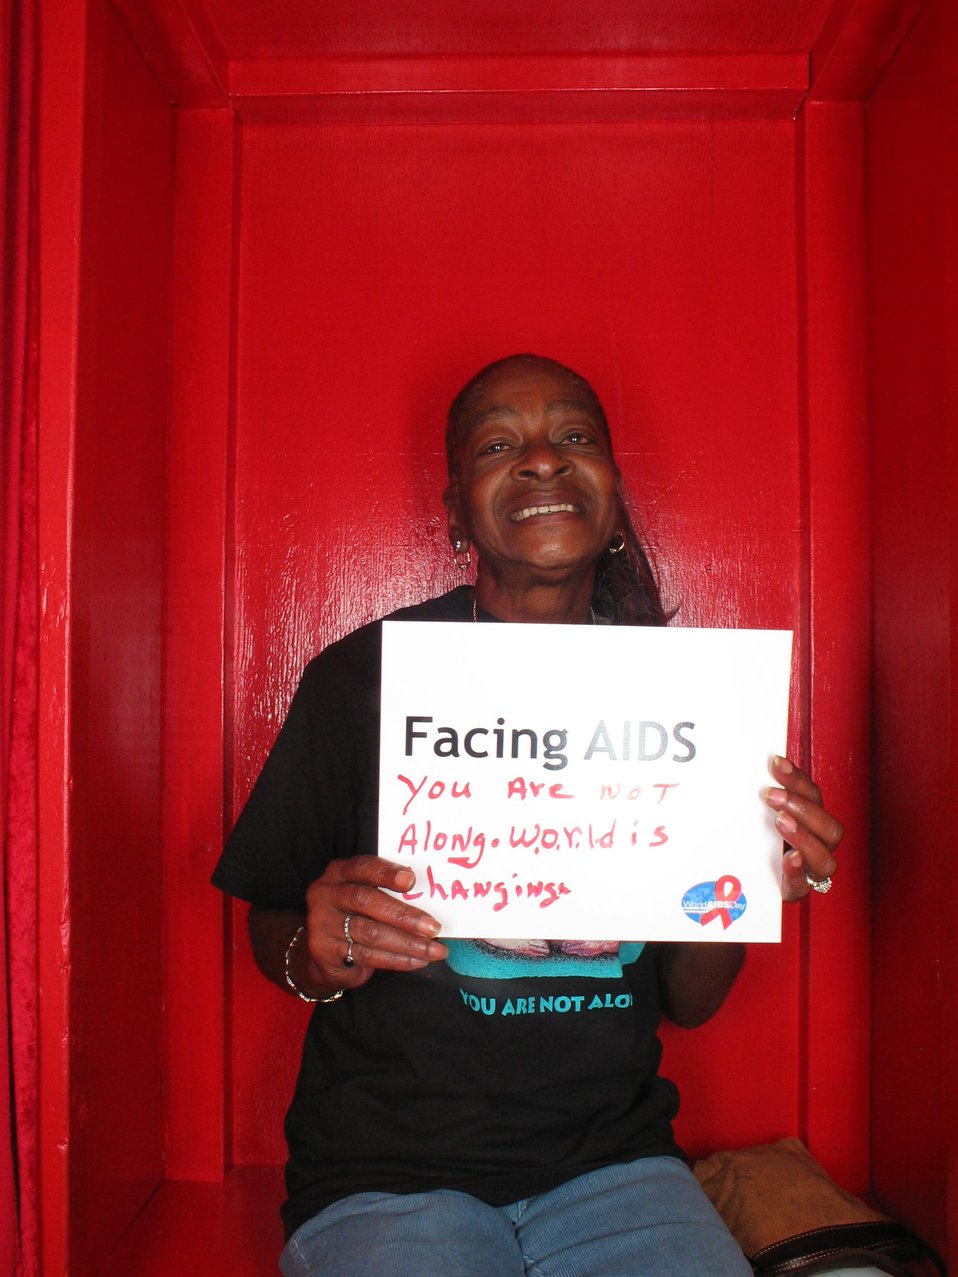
Facing AIDS you are not alone. World is changing.